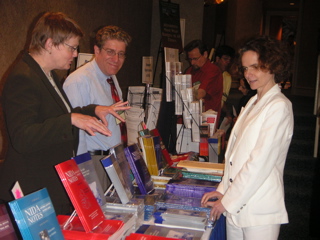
Blending Conference

Dr. Nora Volkow at NIDA exhibit, Blending Conference, Miami, June 2005